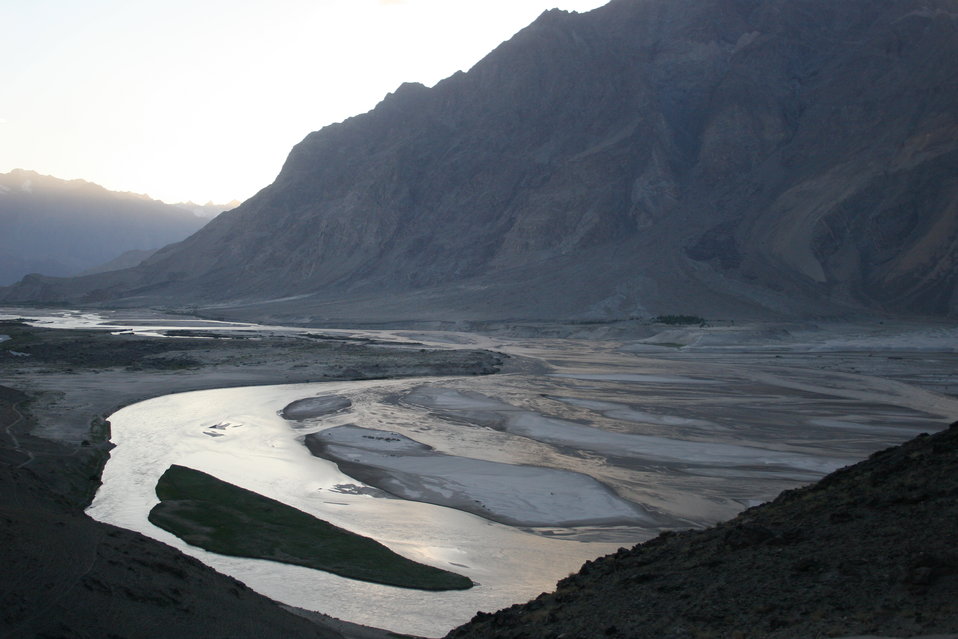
Another view of canals